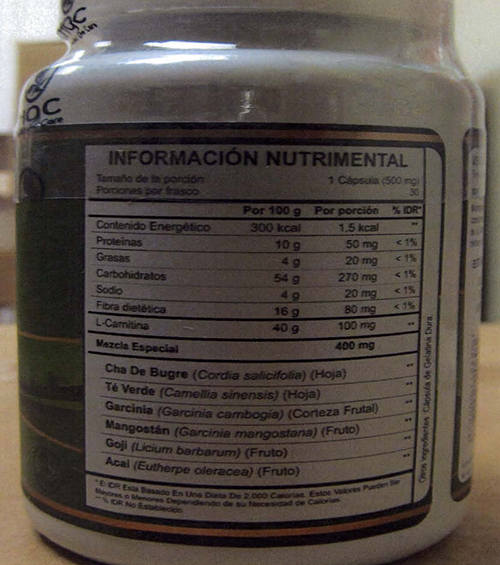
RECALLED – Dietary Supplement

August 16, 2013 – Product Recall – Herbal Give Care LLC Issues Voluntary Nationwide Recall of Esbelder Man Capsules, Esbelder Fem Capsules, and Esbelder Siloutte Capsules Vitamin Supplements Due to Potential Health Risks.